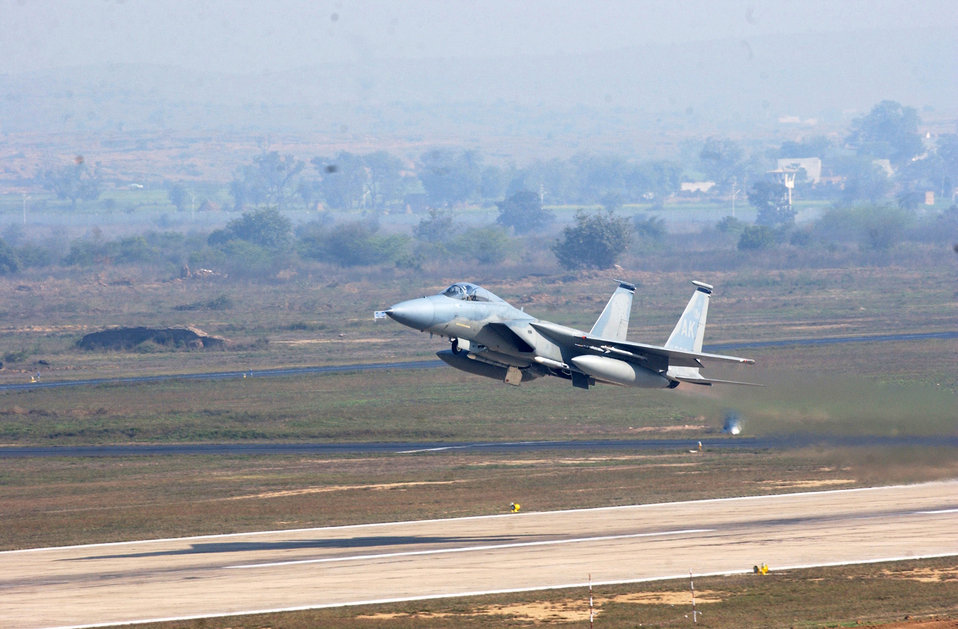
Cope India '04

GWALIOR AIR FORCE STATION, India -- An F-15 Eagle takes off from here during Cope India '04, a bilateral fighter exercise between U.S. and Indian air forces. About 150 U.S. airmen are here supporting the first bilateral fighter exercise between the two air forces in more than 40 years.